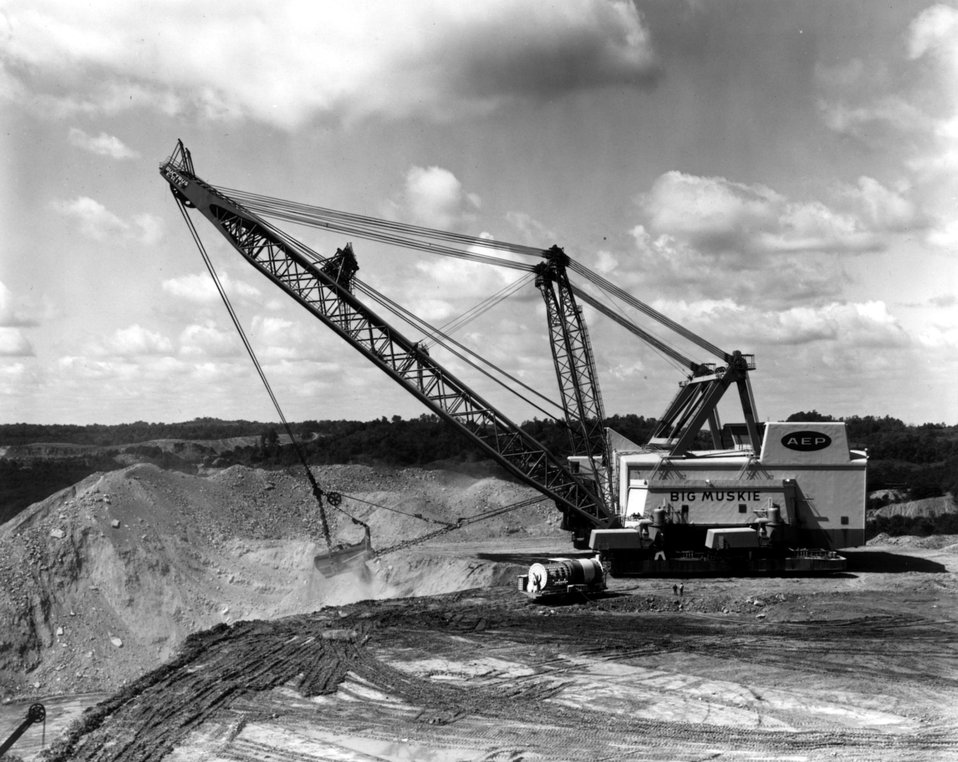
Big Muskie dragline, Ohio coal strip mine, biggest mobile land machine in the world
c.1969